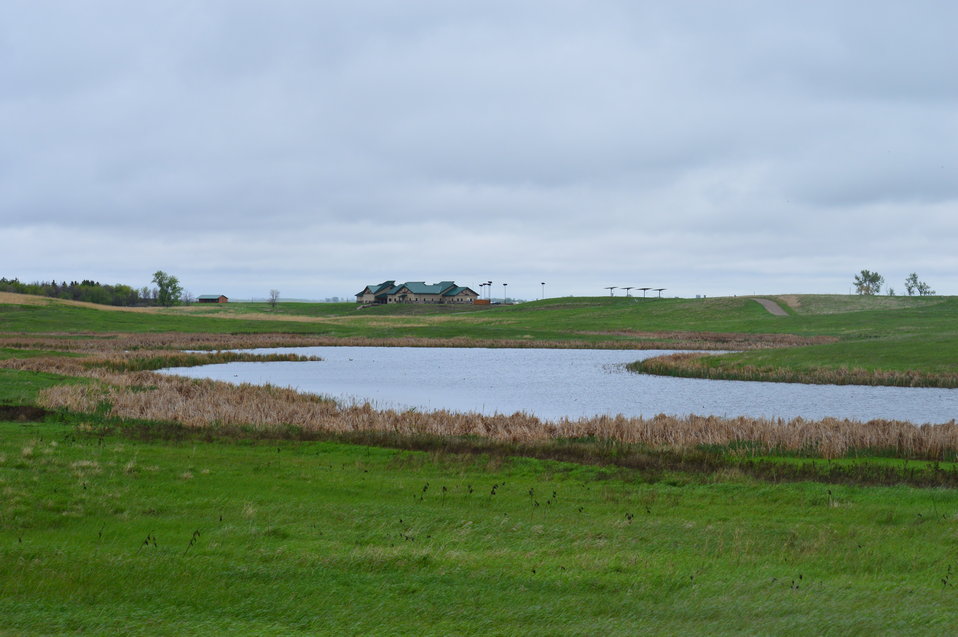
View from the auto tour route

Scenery and wildlife and Audubon National Wildlife Refuge in North Dakota.